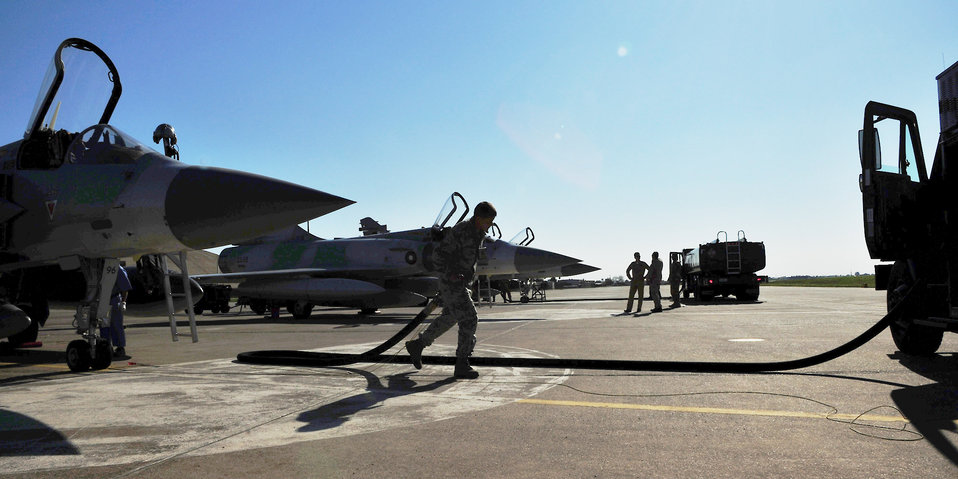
Incirlik Airmen fuel Operation Odyssey Dawn

Senior Airman Kevin Kloss refuels a Qatari Mirage F-1 March 25, 2011, at Incirlik Air Base, Turkey, in support of Operation Odyssey Dawn. Airman Kloss is assigned to the 39th Logistics Readiness Squadron.